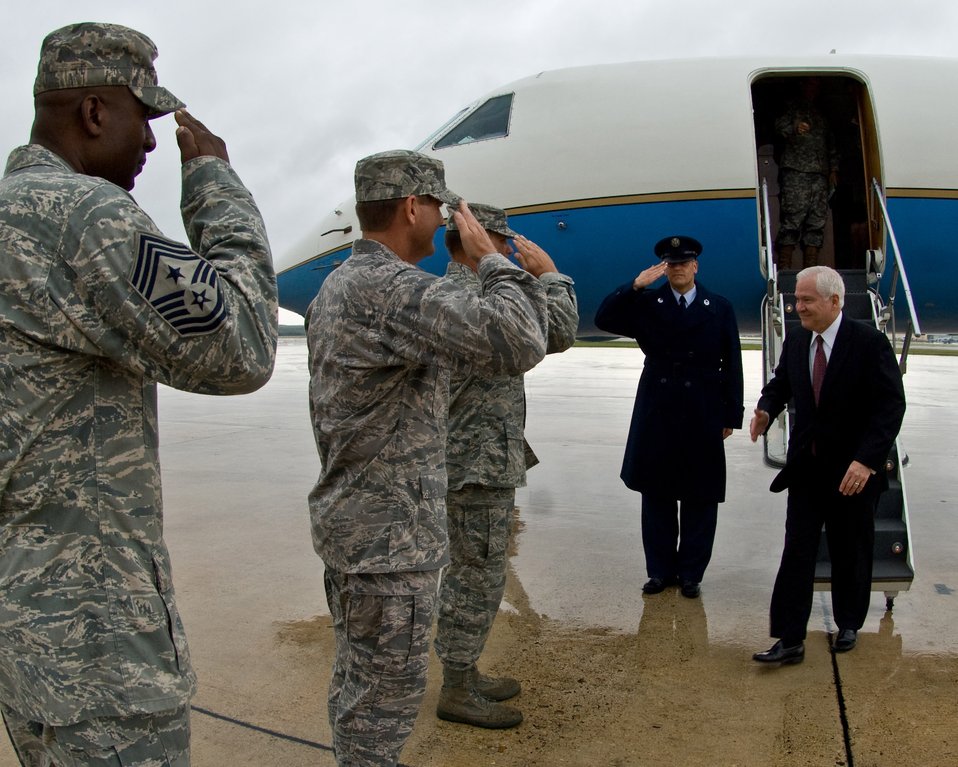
SECDEF visits Airmen, tour BMT facilities

Secretary of Defense Robert M. Gates is greeted by Brig. Gen. Leonard Patrick, Col. Eric Wilbur and Chief Master Sgt. Juan Lewis upon his arrival at Lackland Air Force Base in San Antonio, Texas, July 24.